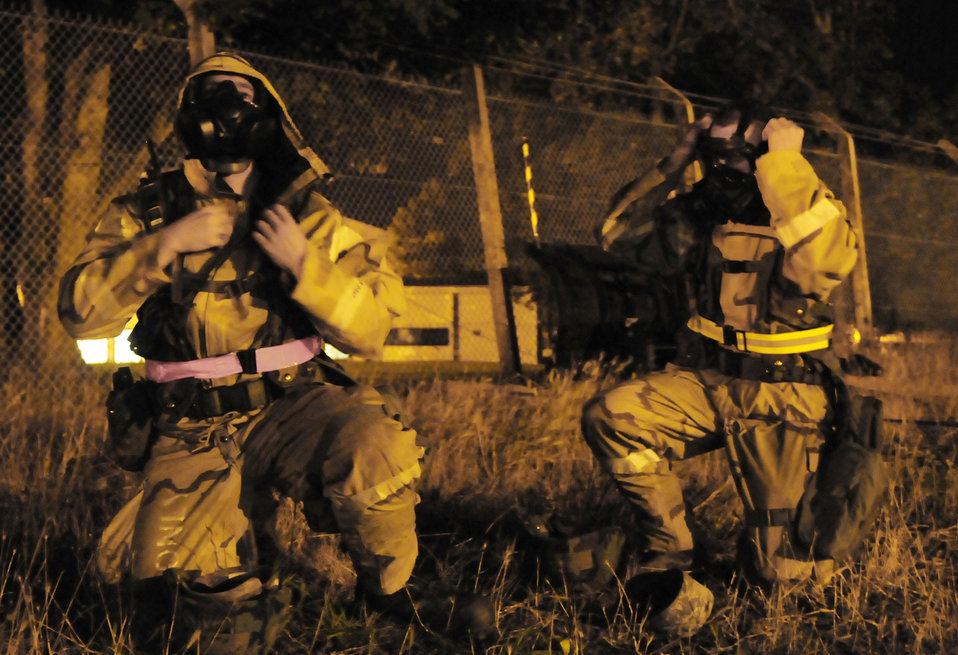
Working the night shift

Airman 1st Class Cody Seymour and Staff Sgt. Marc Bakker don gas masks during an exercise July 22 at Royal Air Force Mildenhall, England. Sergeant Bakker and Airman Seymour are both assigned to the 100th Civil Engineer Squadron and members of the damaged airfield reconnaissance team that sweeps the runway area after any simulated attack to check for damage or unexploded ordinance.